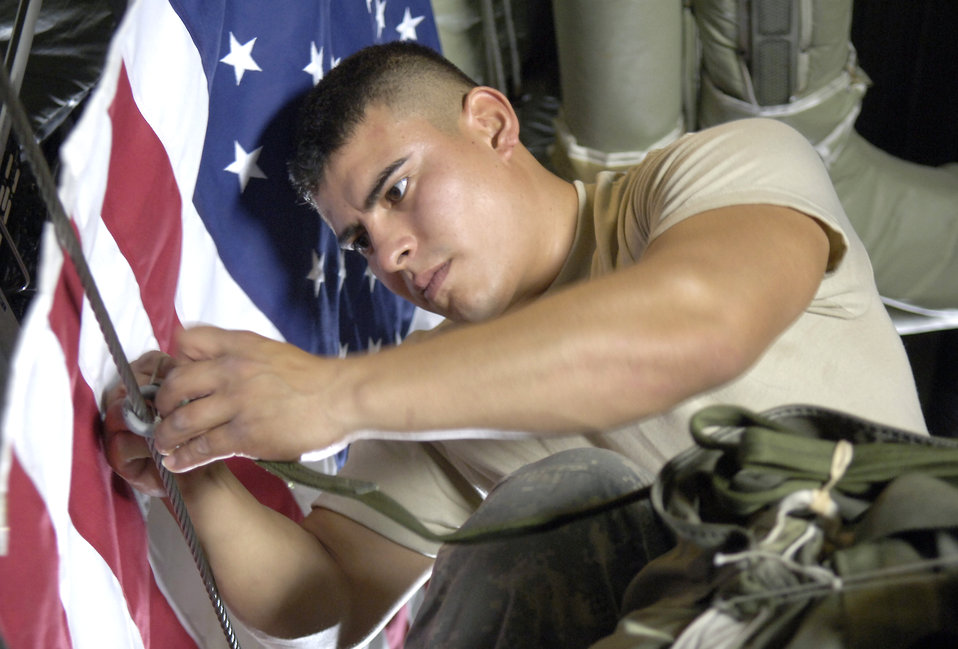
Bagram C-130s drop high-tech cargo delivery system

Army Spc. Oscar Osorio attaches the parachute activation cord of a Joint Precision Air Drop System bundle to a C-130 Hercules static line before an airdrop over Afghanistan Aug. 31. Specialist Copley is a parachute rigger with the 647th Quartermaster Detachment.